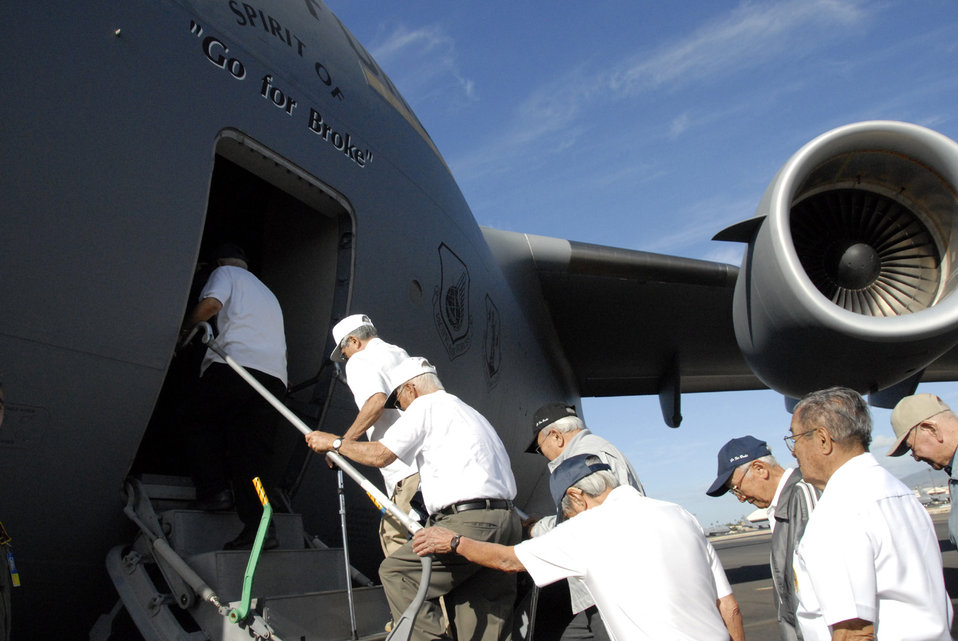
WWII vets fly

Veterans of the famed 442nd Regimental Combat Team and the 100th Infantry Battalion climb on board the